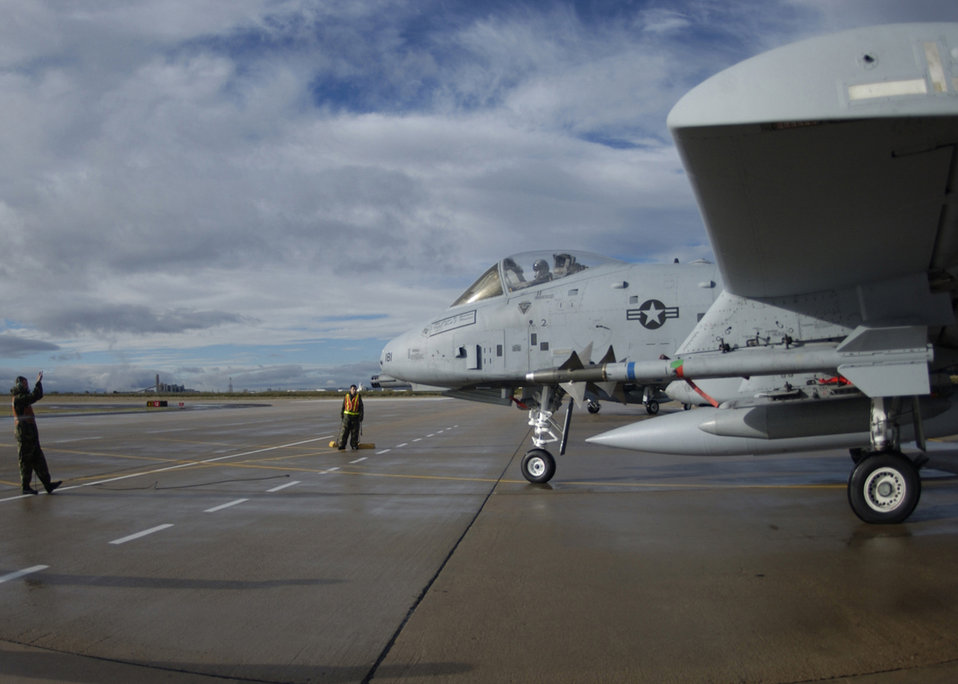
Check it 'n' bolt

DAVIS-MONTHAN AIR FORCE BASE, Ariz. -- Airman 1st Class Robert Watson directs an A-10 Thunderbolt II as it prepares to take off here Feb. 12. Airman Watson is a 355th Aircraft Maintenance Squadron crew chief.